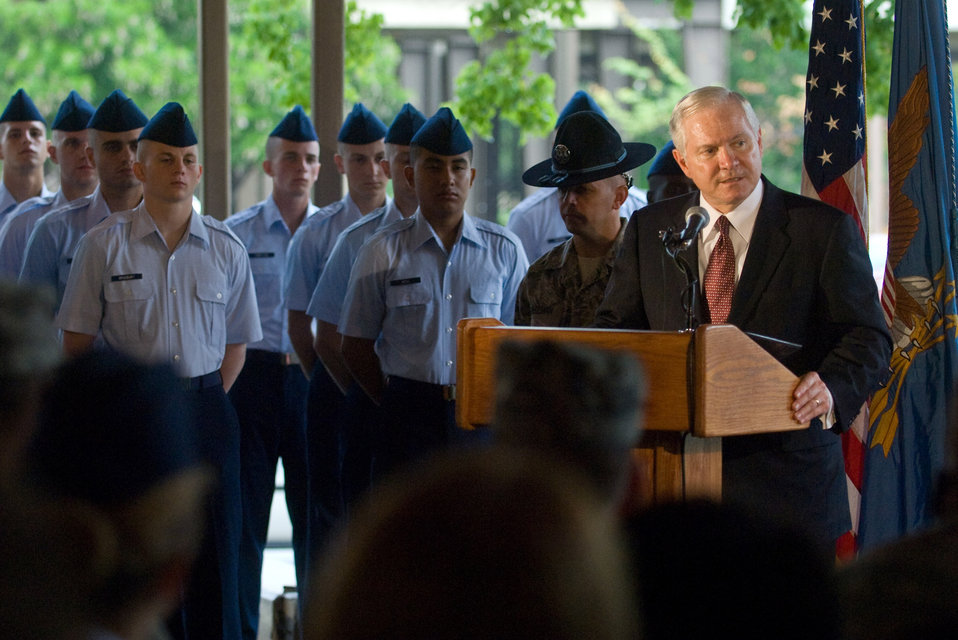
Secretary Gates visit

Secretary of Defense Robert M. Gates addresses the audience July 24 during a ceremony for Air Force basic military training graduates during his visit to Lackland Air Force Base, Texas.